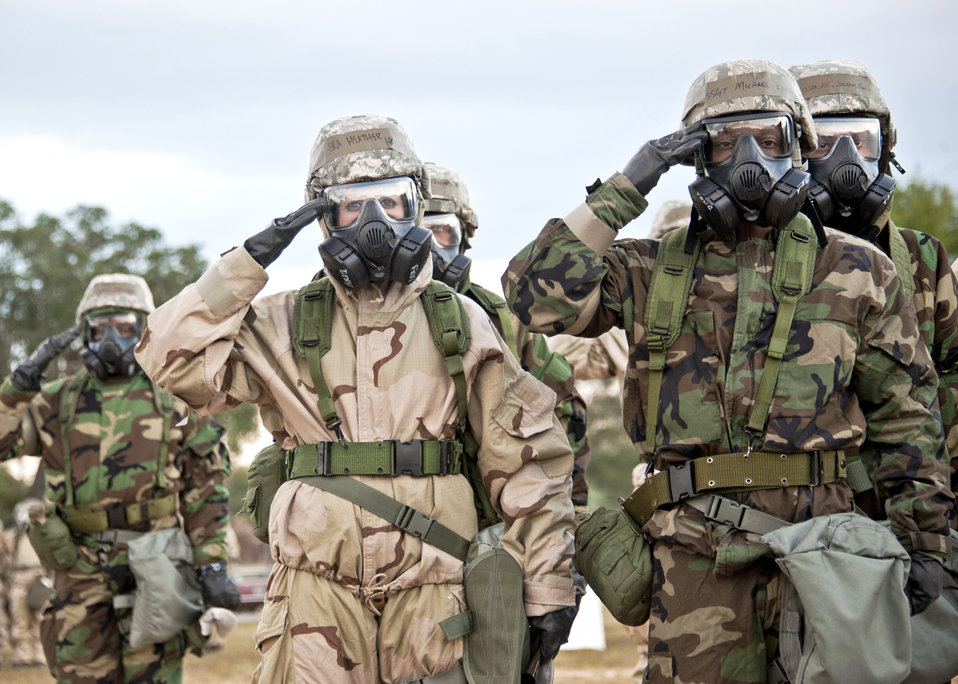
We salute you

Senior Airman Heather Holland, with the 96th Force Support Squadron, and Staff Sgt. Michael Fleming, with the 96th Communications Squadron, salute during retreat Nov. 18, 2010, at Eglin Air Force Base, Fla. Approximately 50 Airmen attended the retreat ceremony in full mission oriented protective posture gear while attending training.